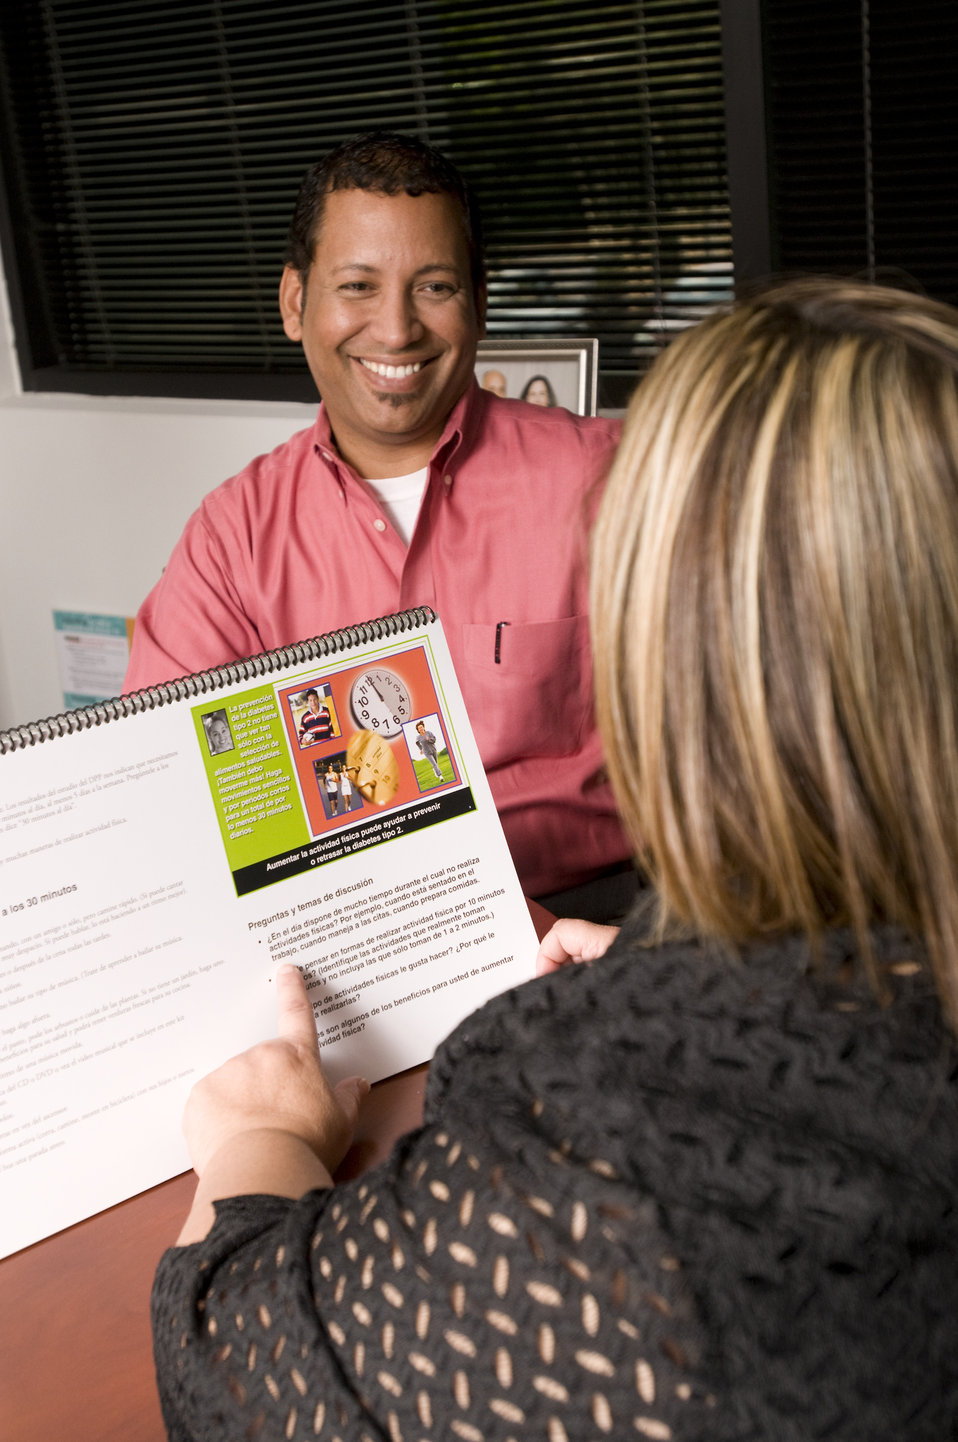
This image depicts a man with diabetes in the background listening to a community health worker familiar with the necessary proactive approach one must implement in order to maintain control over the detrimental effects of this disease. The health worker was providing answers to questions posed by the patient regarding actions he'd need to take, enabling him to lead a healthy, active life with diabetes. She was referencing the Spanish version of a National Institutes of Health educational flip-chart entitled, 'El camino hacia la buena salud', which translated into English means, 'The Road to Health'.